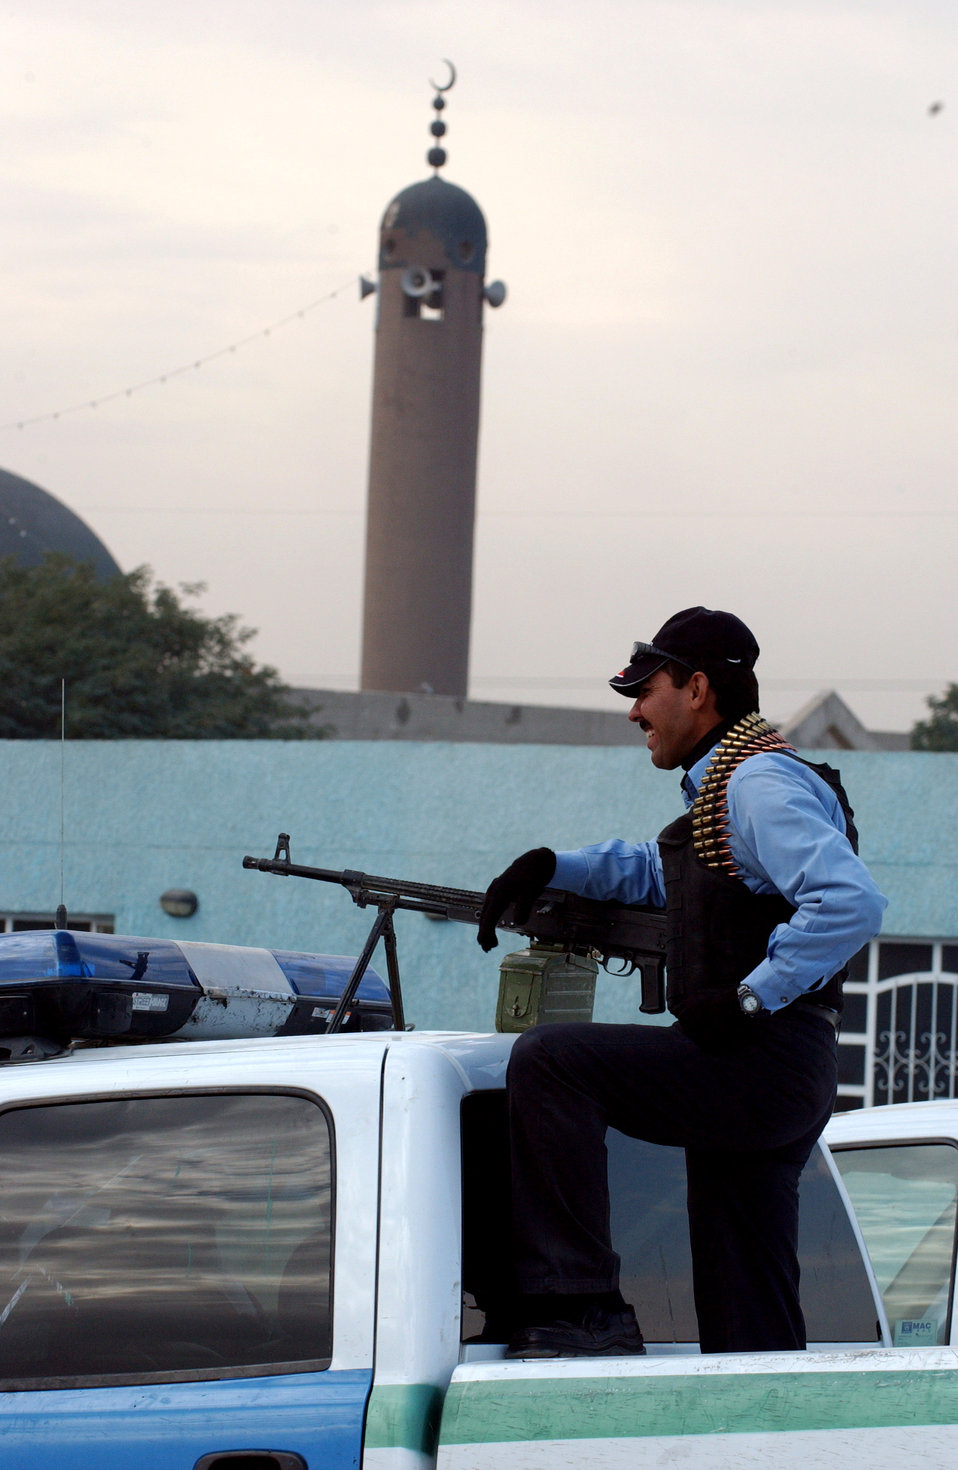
Street patrol

An Iraqi police officer stands ready for a patrol at the Hy Al-Amil station Nov. 23 in Baghdad, Iraq. Iraqi policemen work with Airmen from Detachment 7, 732nd Expeditionary Security Forces Squadron, whose mission is to deploy into the city of Baghdad assisting Iraqi police in achieving self-sufficiency.